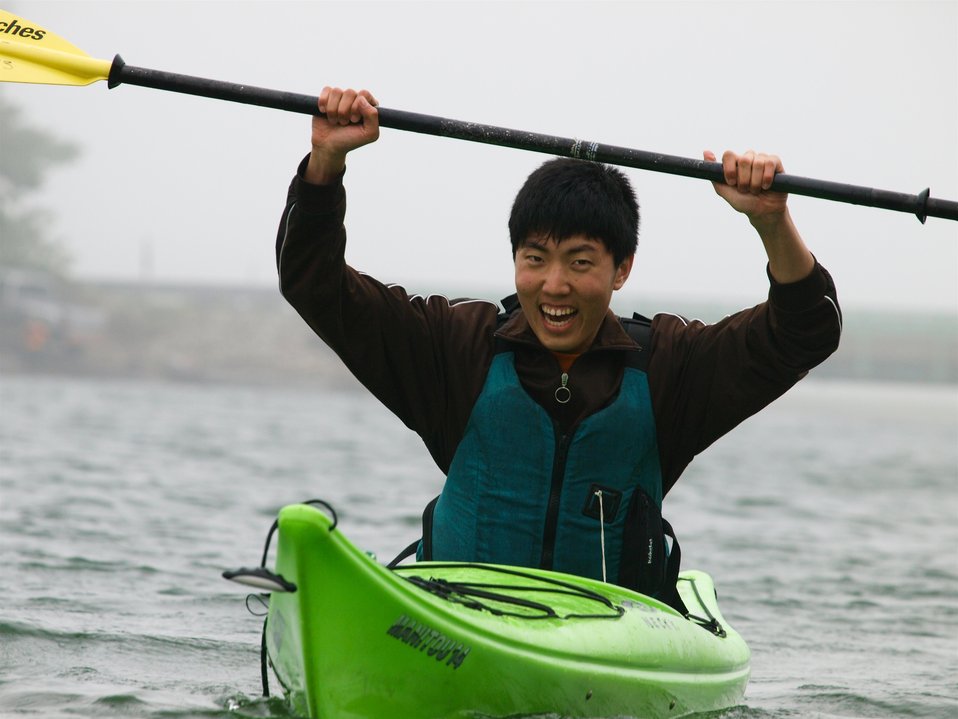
Kayak Trip